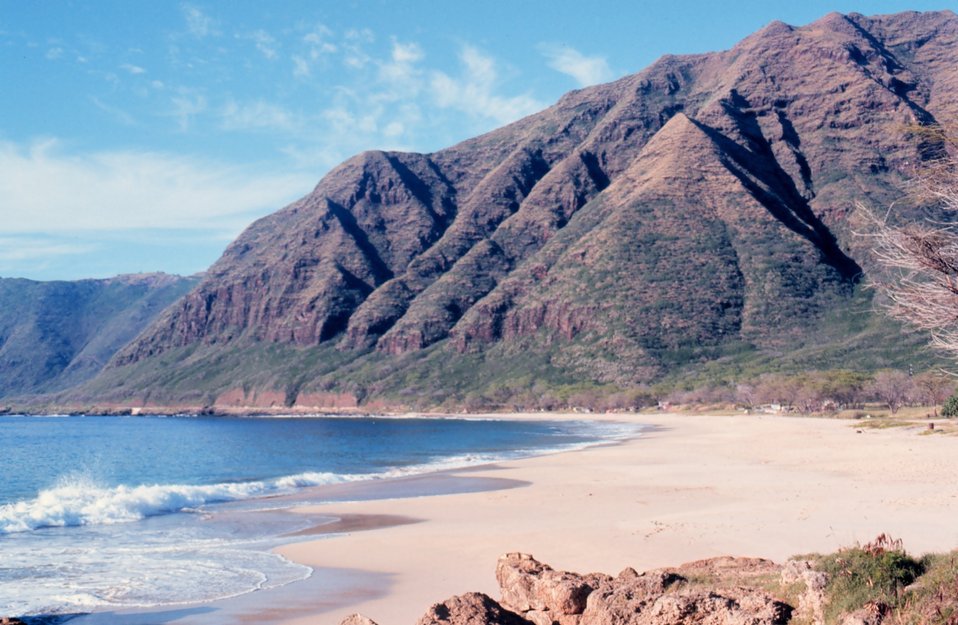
Waianae coast -southwest Oahu